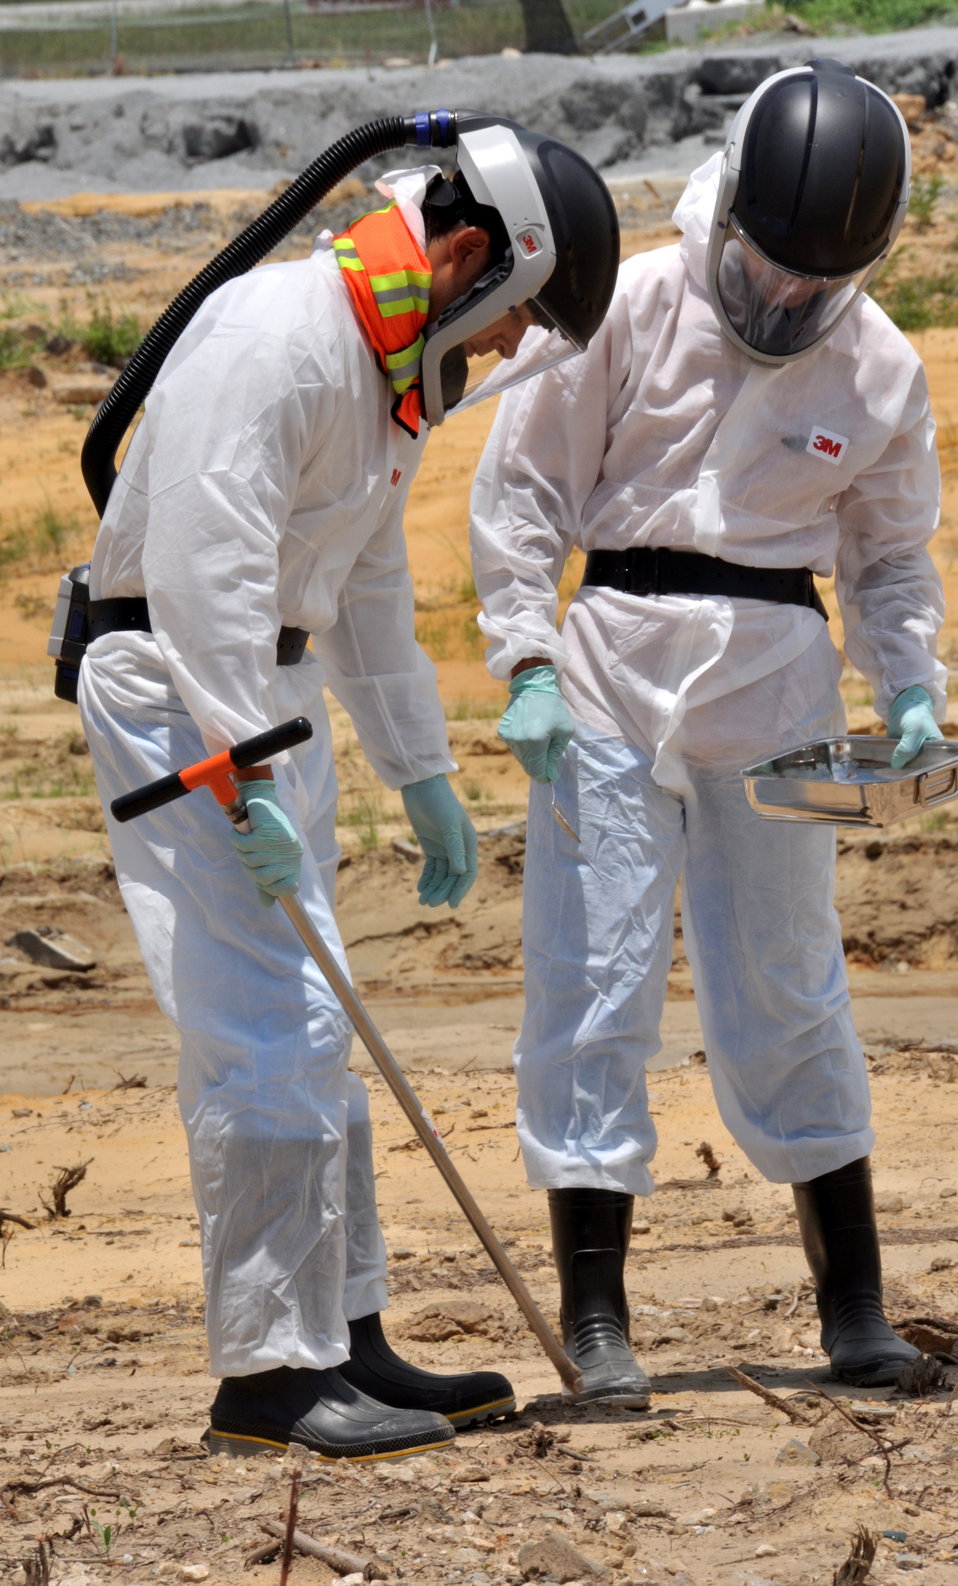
USAID Dioxin Contamination Project Progress: Soil Sampling

Progress at the Environmental Remediation of Dioxin Contamination Project at Danang Airport

July 16, 2013